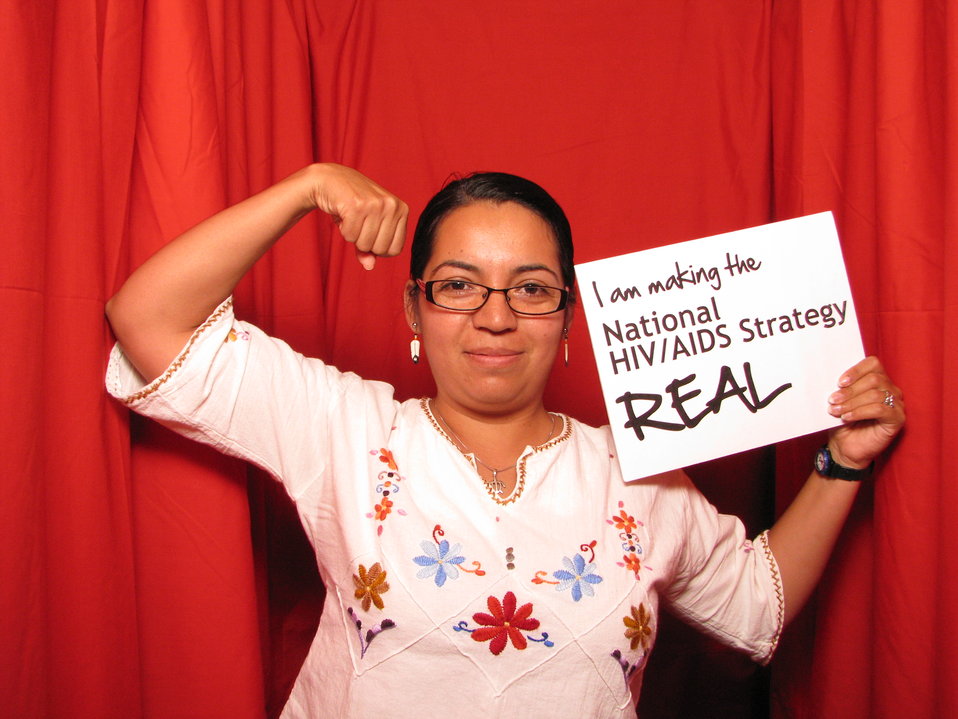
I am Making the National HIV/AIDS Strategy REAL

From the AIDS.gov photo booth at the U.S. Conference on AIDS, September 2010 (Orlando, FL).